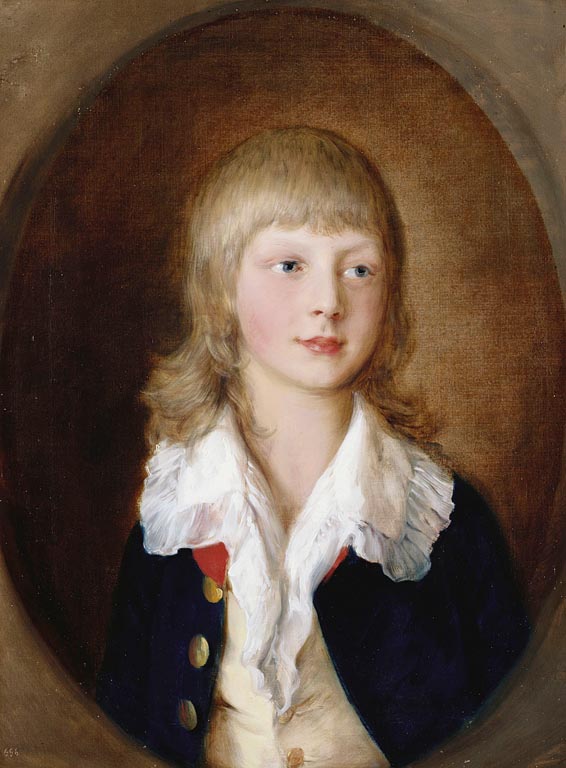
Gainsborough - Prince Adolphus, 1782